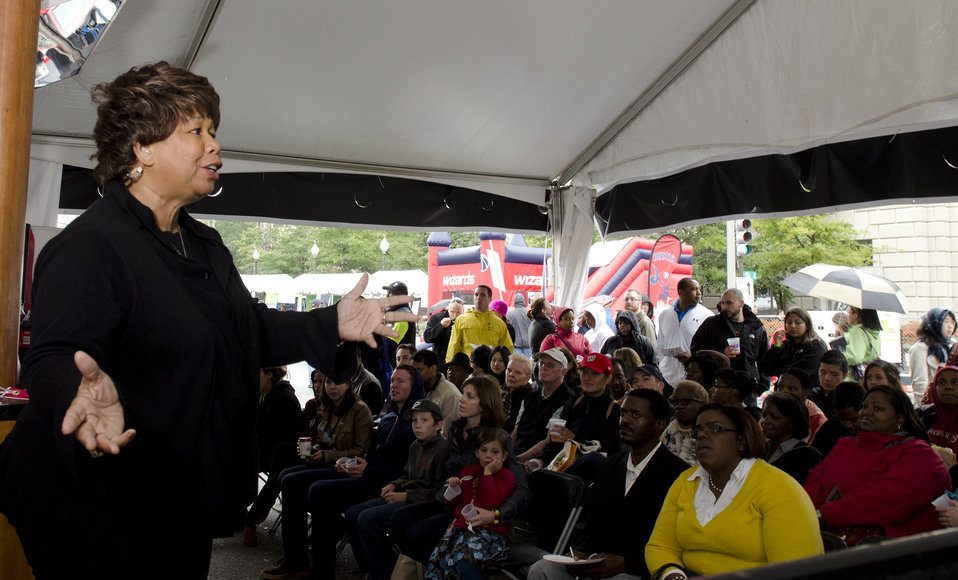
Shirley Harrington-Watson of the USDA Office of Communications speaking at the Taste of D.C., event that highlights more than 70 eateries, 30 specialty beer providers, the United Service Organization (USO) Metropolitan Washington, and live bands. It is anticipated that more than 500,000 people will attend over the course of the three-day event, which extends from the White House to the Capitol, along Pennsylvania Ave. in Washington D.C. on Sunday, October 7, 2012.